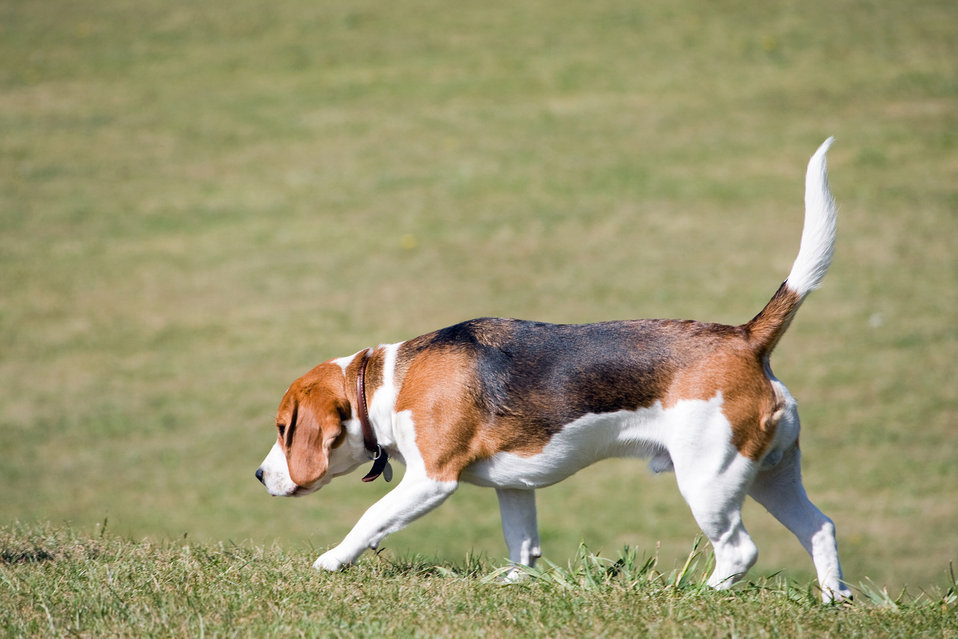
Beagle dog

Profile image of a beagle dog walking on the green grass.